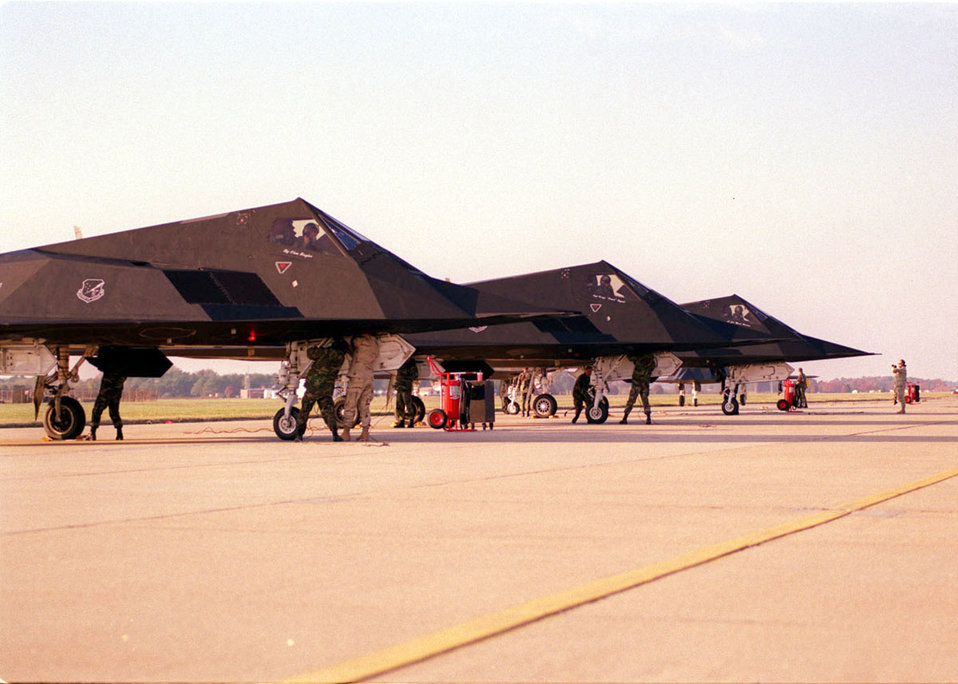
Layover

LANGLEY AIR FORCE BASE, Va. -- F-117 Nighthawks park along the flightline shortly after touching down Nov. 19. The aircraft remained here overnight before leaving for Kuwait.